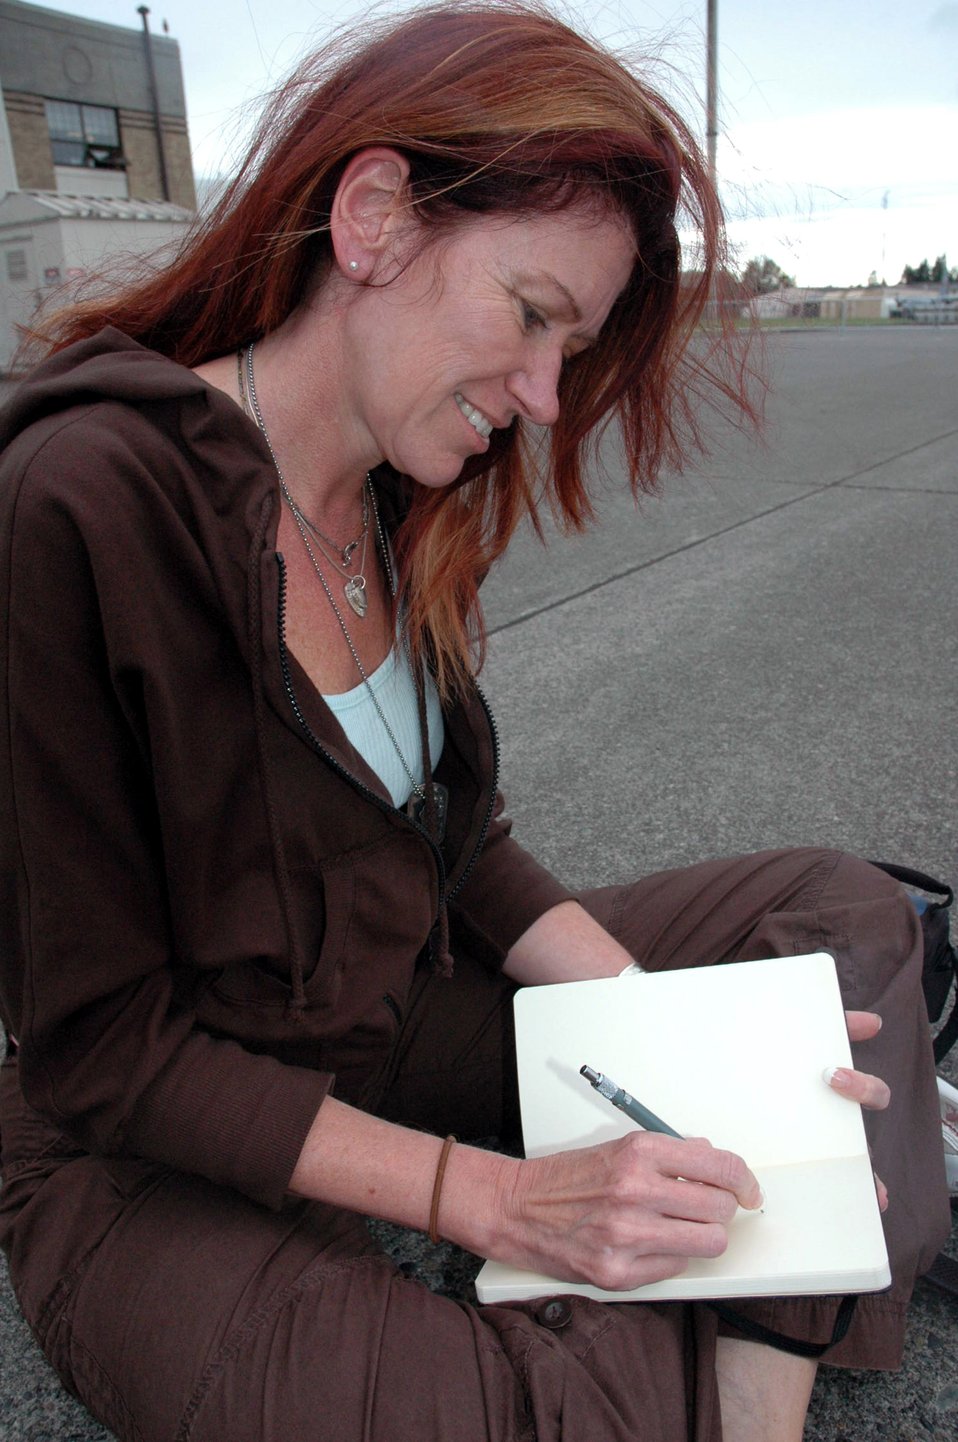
Artists document Rodeo competition

Christine Murphy Soucey sketches a KC-10 Extender from McGuire Air Force Base, N.J., during operations July 23 for Air Mobility Command's Rodeo 2007 at McChord AFB, Wash. Ms. Soucey is an artist from Haverhill, Mass., and a member of the Air Force Art Program. She has been an artist for more than 25 years and works in oils and mixed media. She is one of four artists in the Air Force Art Program to visit Rodeo 2007 for future art works for the Air Force.